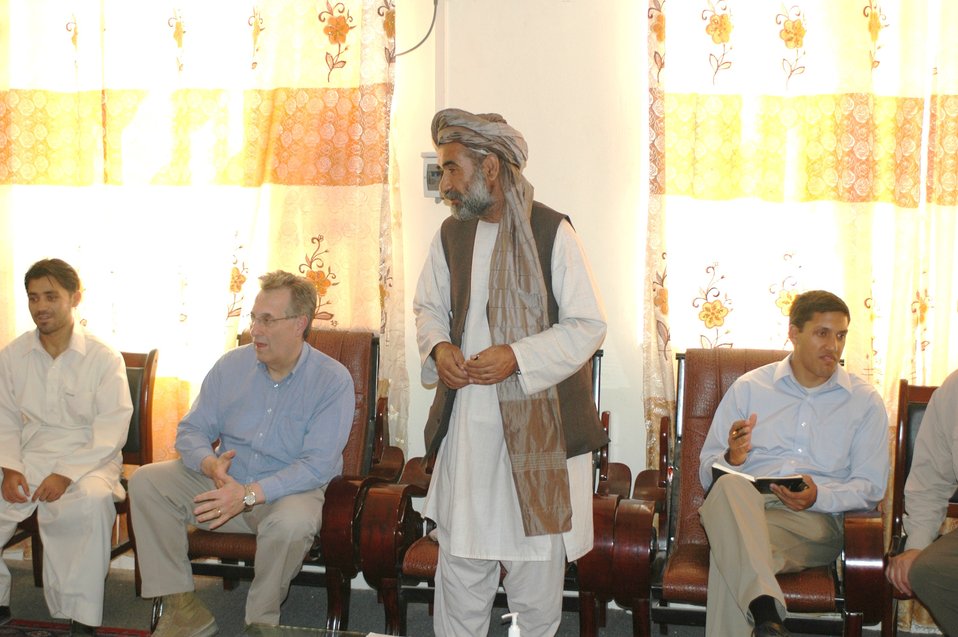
Dr Shah Visits Argandab April 10, 2010